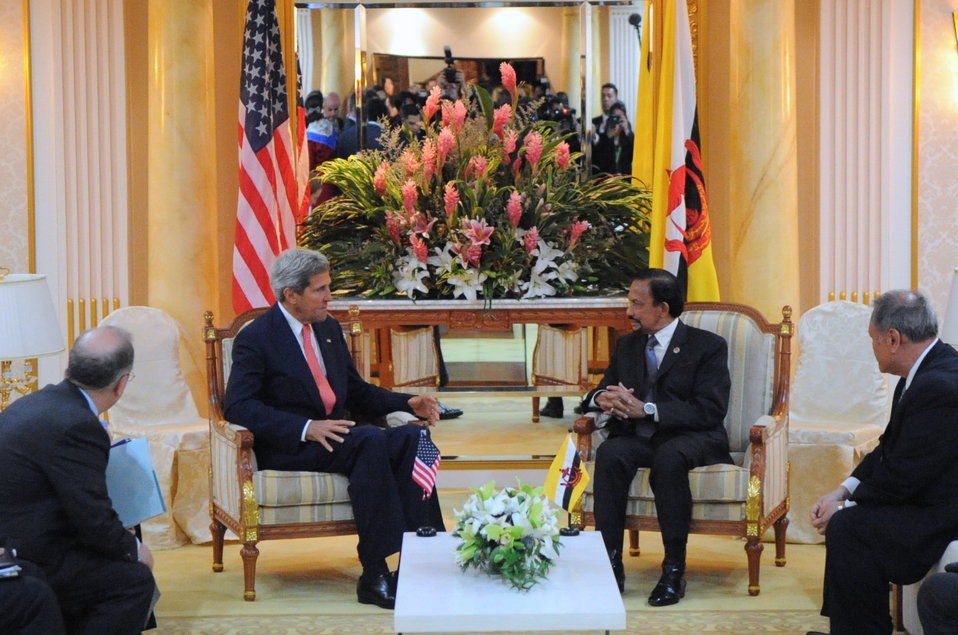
Secretary Kerry Meets With Sultan Bolkiah of Brunei

U.S. Secretary of State John Kerry meets with Sultan Haji Hassanai Bolkiah of Brunei after the East Asia Summit in Bandar Seri Begawan, Brunei, on October 10, 2013.